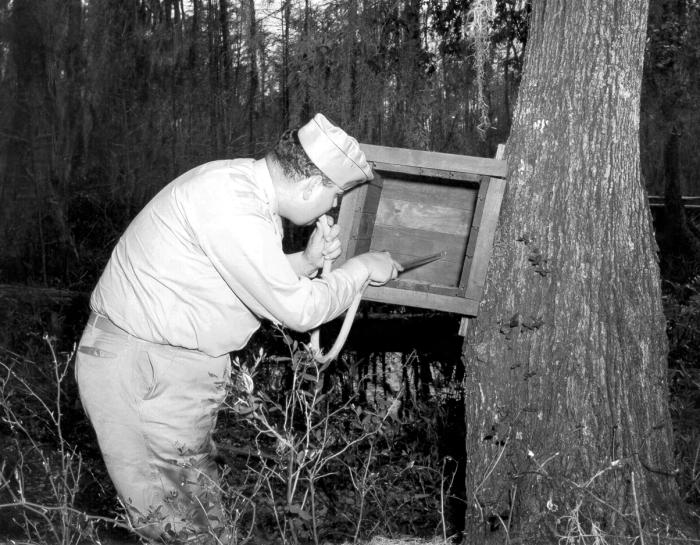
This individual was collecting specimens with a mouth aspirator from a wooden cage during an adult mosquito survey.